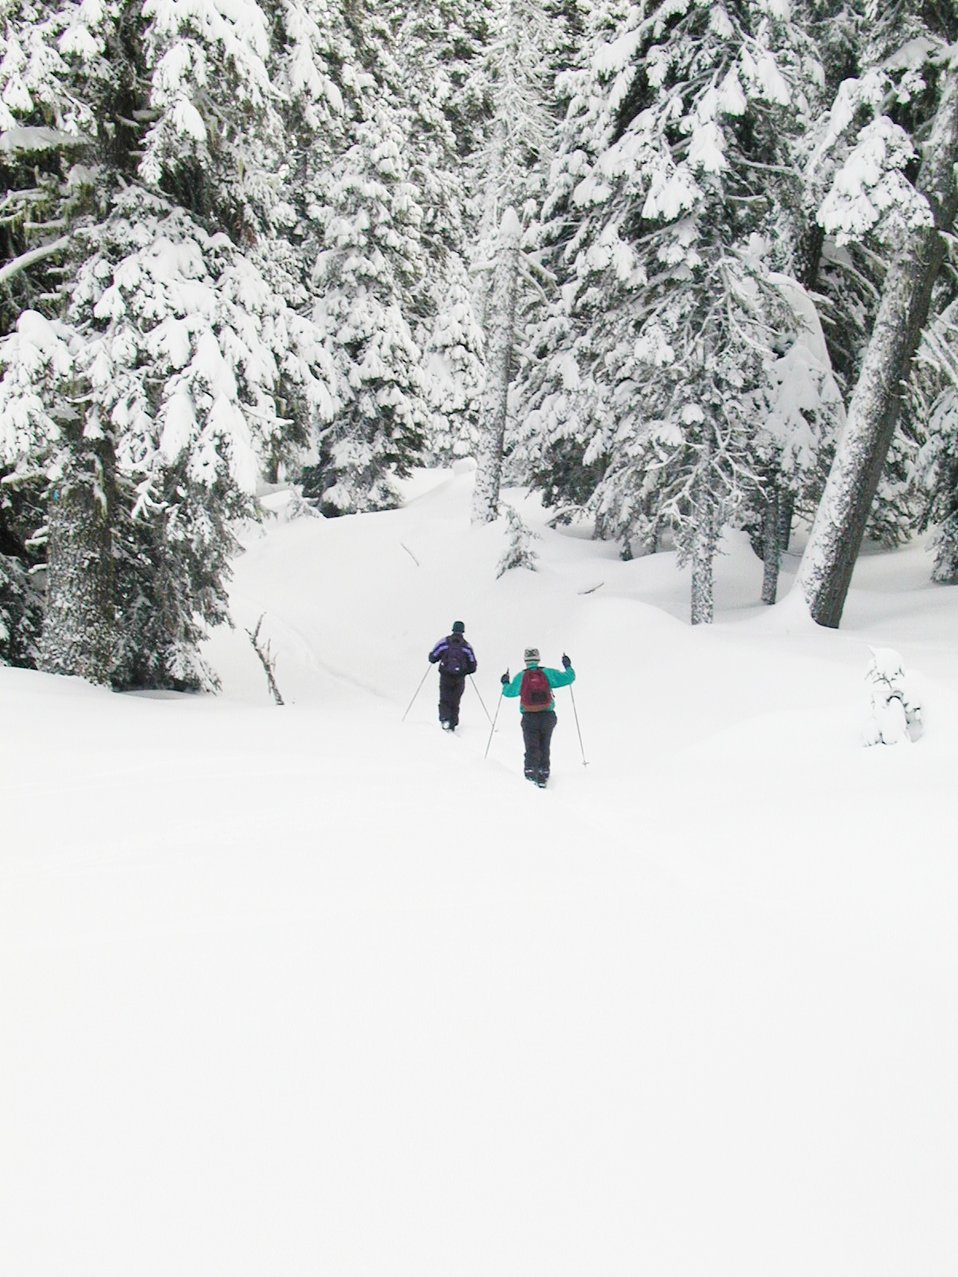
Buck Prairie Cross Country Ski Trail system consists of approximately 17 miles of interconnected trails on public and private lands on the ridges just west of Howard Prairie and Hyatt Reservoirs.